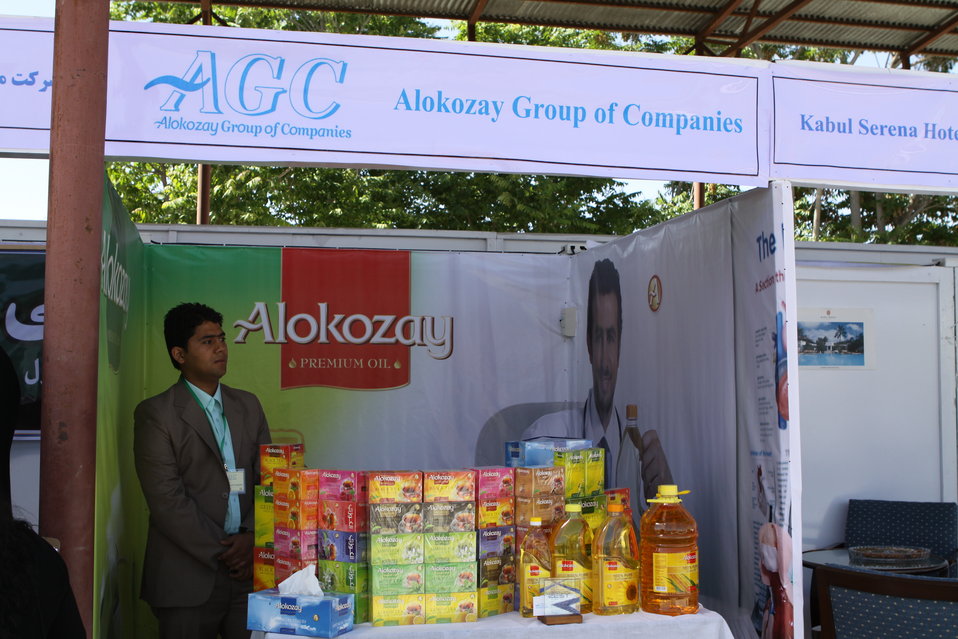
100522 ATVI Graduation 011